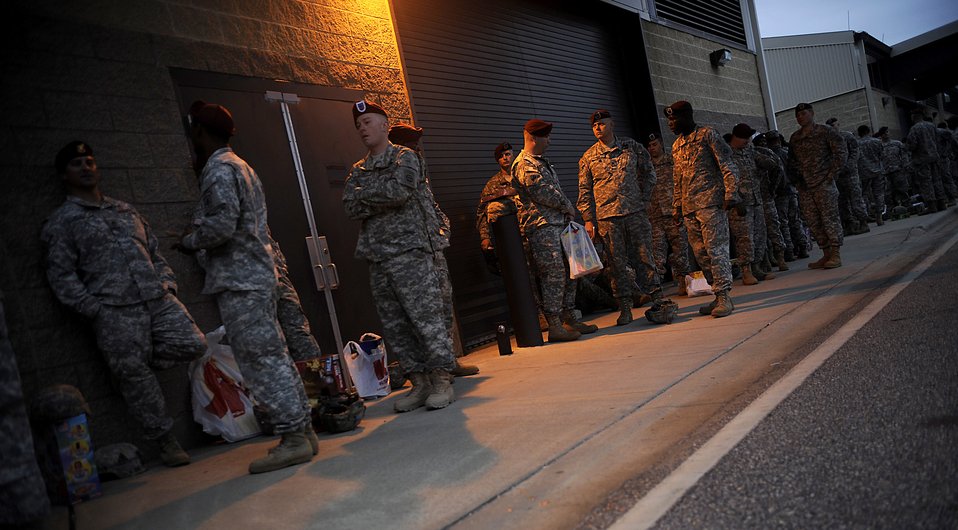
Operation Toy Drop

Soldiers from the 82nd Airborne Division from Fort Bragg, N.C., wait in line to donate the toys and a chance to be picked in a lottery for an opportunity to earn foreign jump wings Dec. 5 at Pope Air Force Base, N.C. Operation Toy Drop is an annual Airborne jump at Fort Bragg in its 11th year hosted by the Army Civil Affairs and Psychological Operations Command (Airborne), and supported by Fort Bragg's XVIII Airborne Corps and the Air Force Reserve Command's 440th Airlift Wing at Pope AFB that gives Soldiers and Airmen the opportunity to help local families in need over the holidays while boosting morale and incorporating valuable training. More than 3,000 Soldiers donated a toy for a lottery ticket and the chance to jump under a foreign jumpmaster, earning them their foreign jump wings. This year, German and Irish jumpmasters will be issuing the commands from C-130 Hercules aircraft during the operation.